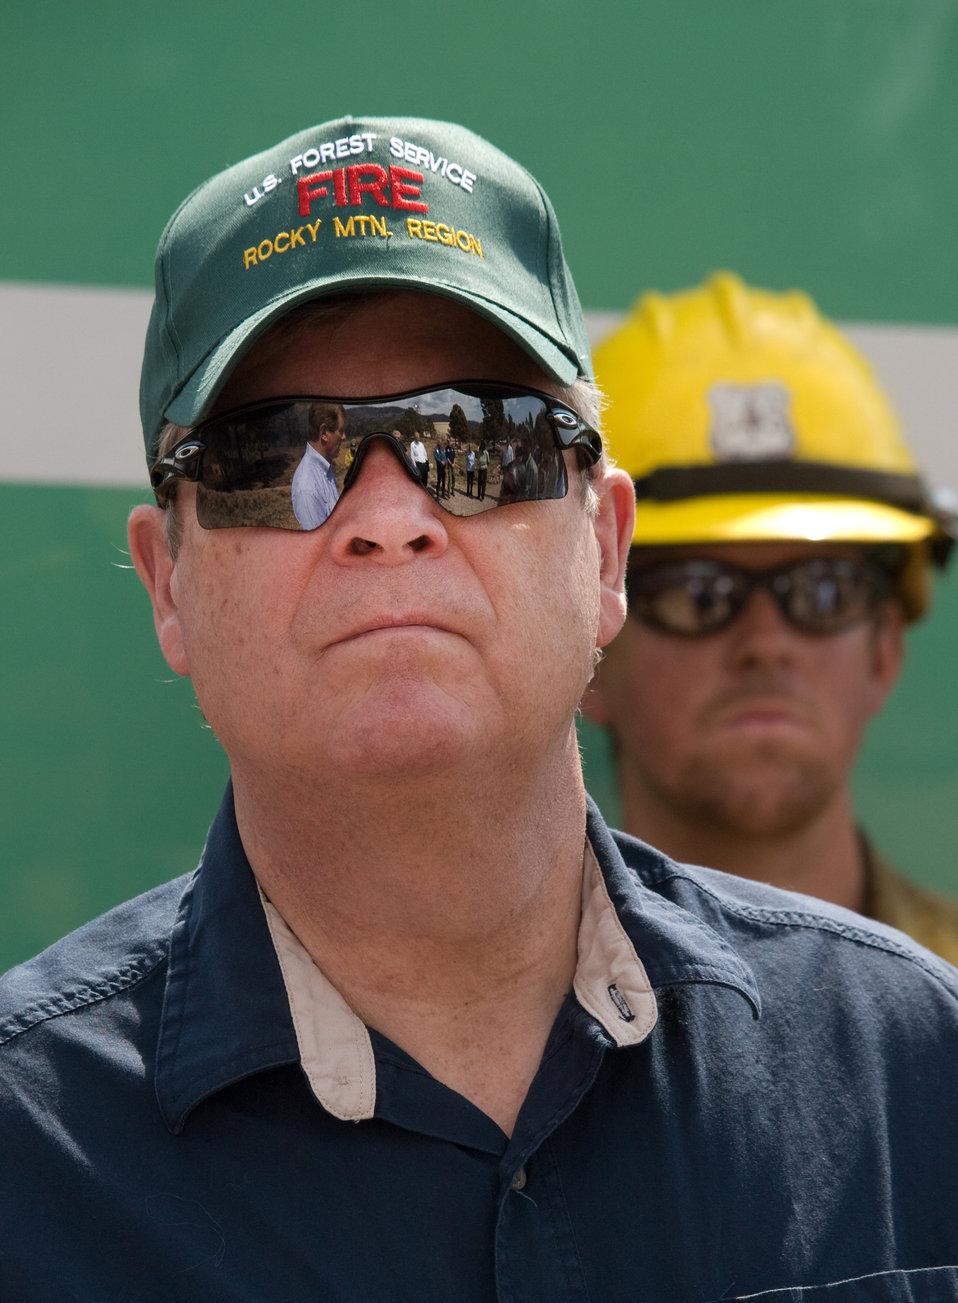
Agriculture Secretary Tom Vilsack listens to a briefing about the Waldo Canyon Fire near Colorado Springs, CO on Tuesday, July 3, 2012.